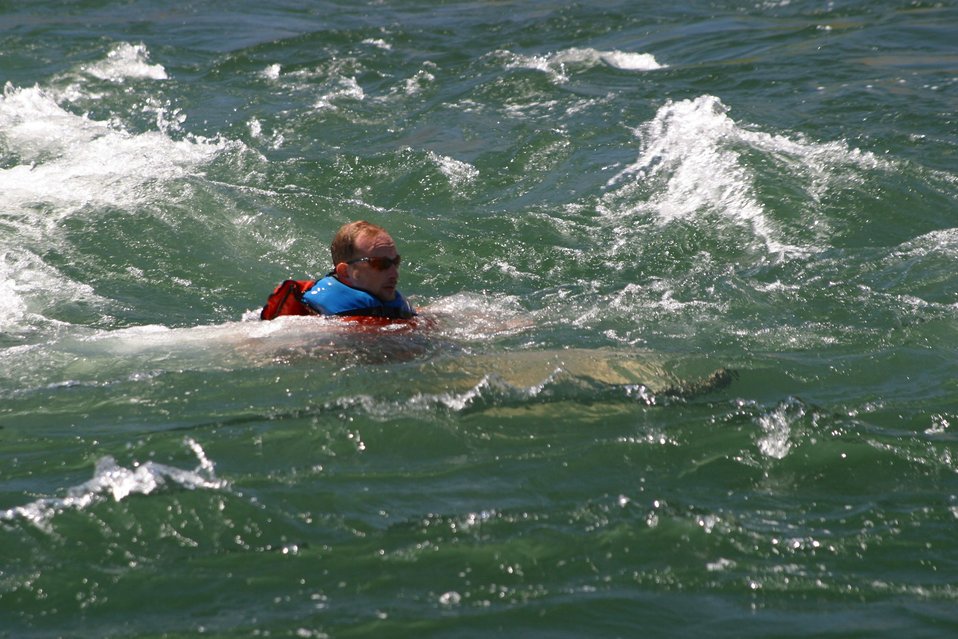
Elevator Rapids near Mile 46 on the Lower Deshcutes River. 7/26/03 Pelton Dam 3600 cfs: Moody Rapids 4300 cfs.